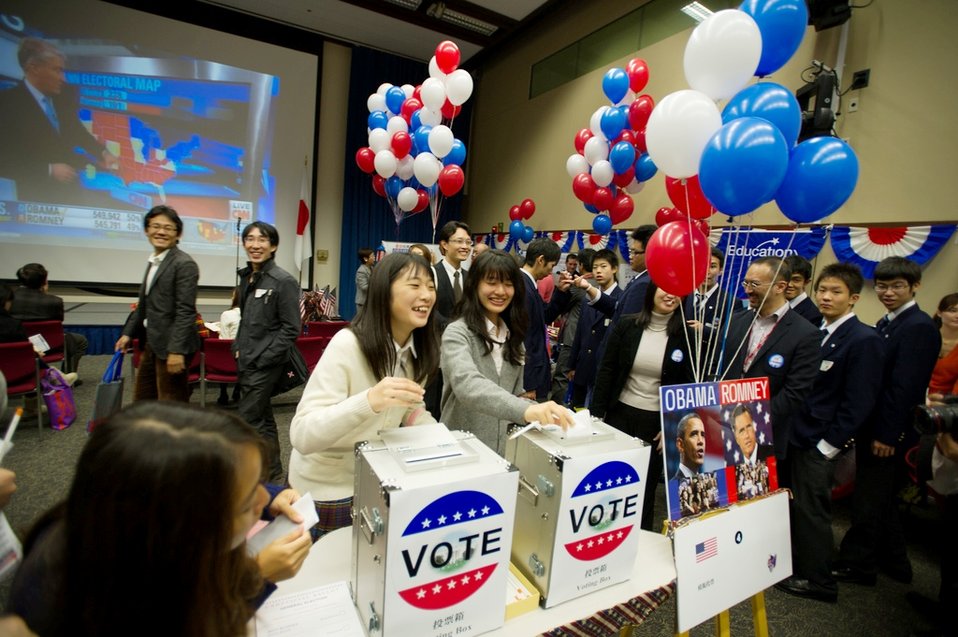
Japanese Students Cast Their Ballots

Japanese high school and college students cast their ballots at the Election 2012 event at the U.S. Embassy in Tokyo, Japan, November 7, 2012.